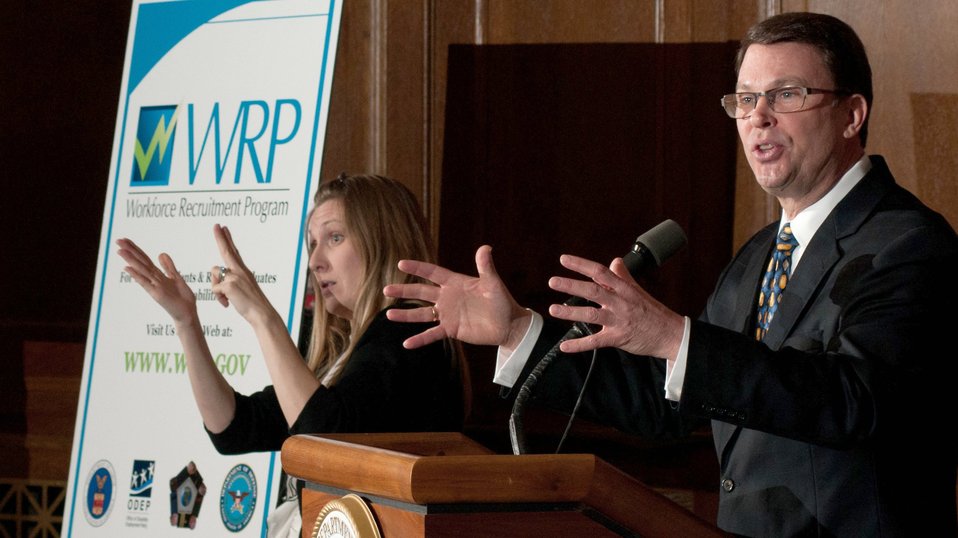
Office of Personnel Management Director John Berry addresses the Work Force Recruitment Program’s (WRP) 'Your Key To Hiring Student Interns and Employees with Disabilities” event hosted by the United States Department of Agriculture (USDA) in the Jefferson Auditorium, Washington, D.C. on Tuesday, February 7, 2012. Beside him American Sign Language interpreter Megan Adams communicates to the hearing impaired in the audience.